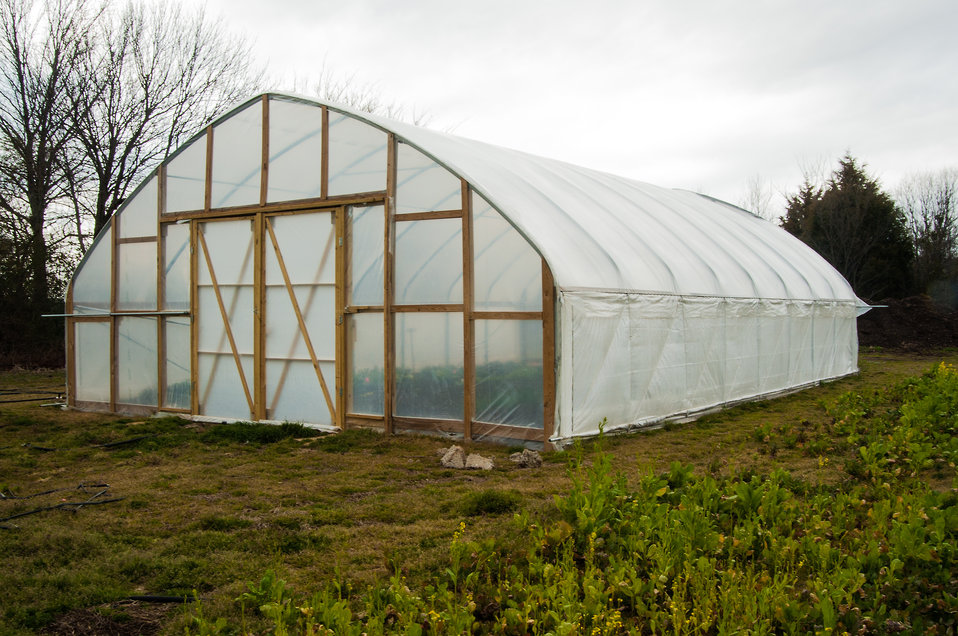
The Arkansas Delta Seeds of Change (ADSOC) Initiative is assisting local specialty crop producers with one of six high tunnel houses at the East Arkansas Enterprise Community, Inc. in Forrest City, AR on Mar. 4, 2013. The technology is being used to assess early/late vegetable market opportunities. The East Arkansas Enterprise Community, (EAEC) Inc.is serving as the fiscal agent for the project. The U.S. Department of Agriculture (USDA) and State agencies including the Strike Force USDA Natural Resources Conservation Service (NRCS), Rural Development (RD), and Farm Service Agency (FSA), and the Cooperative Extension Service are close collaborators with training and outreach efforts to assist producers in achieving USDA’S Good Agriculture Practices Certificate.